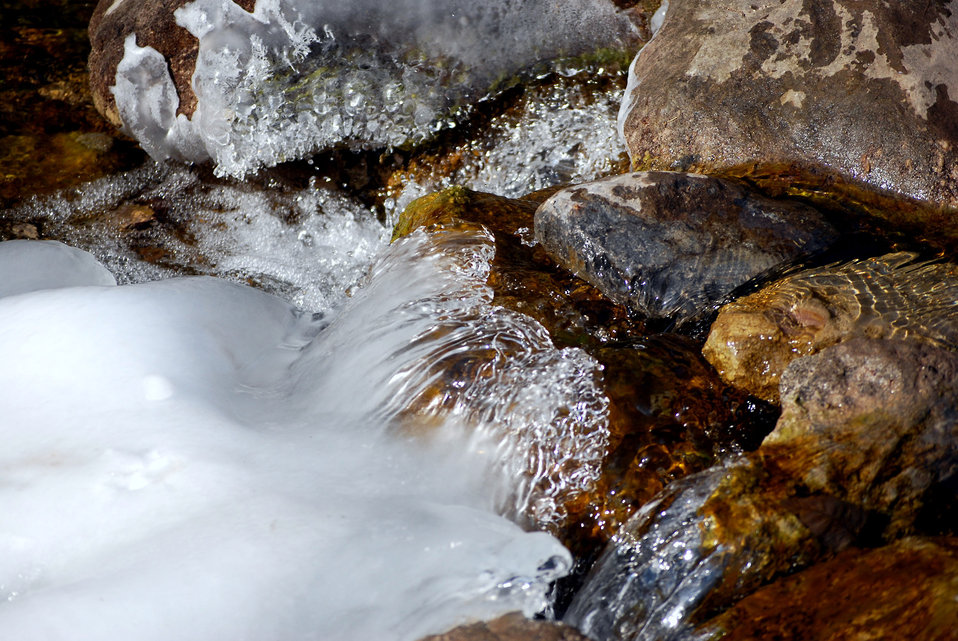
Turning to ice

Running water turning to ice.